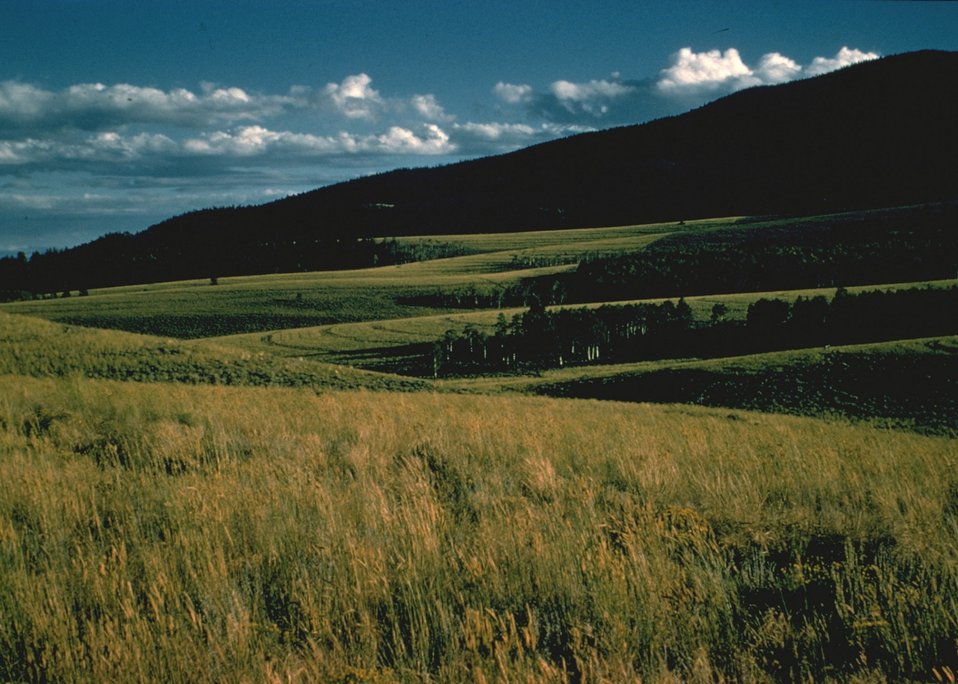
Scenic view of grassland.